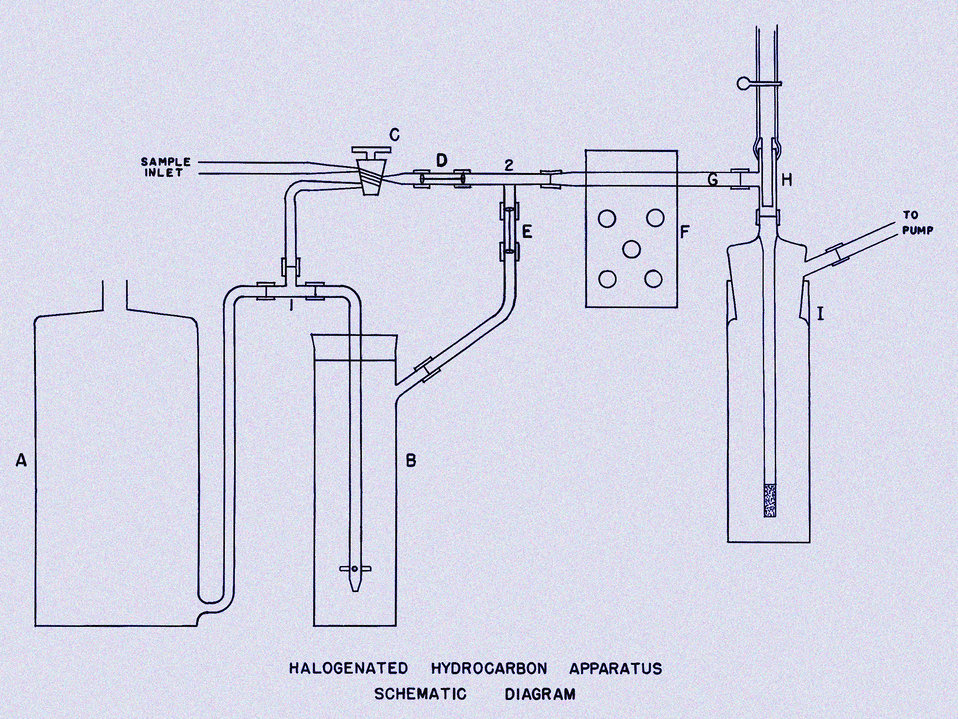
This historical drawing, provided by the Center for Disease Control's (CDC), National Institute for Occupational Safety and Health (NIOSH), revealed the basic mechanical details involved in the design of a halogenated hydrocarbon manufacturing apparatus. Halogenated hydrocarbons are used as solvents in vapor degreasing operations, and are known as cardiovascular, or blood toxicants. In the 1940s and 1950s, the Industrial Hygiene Division (IHD) investigated hazards associated with many types of manufacturing activities. This manufacturing design is an example of a measure meant to improve workplace safety.